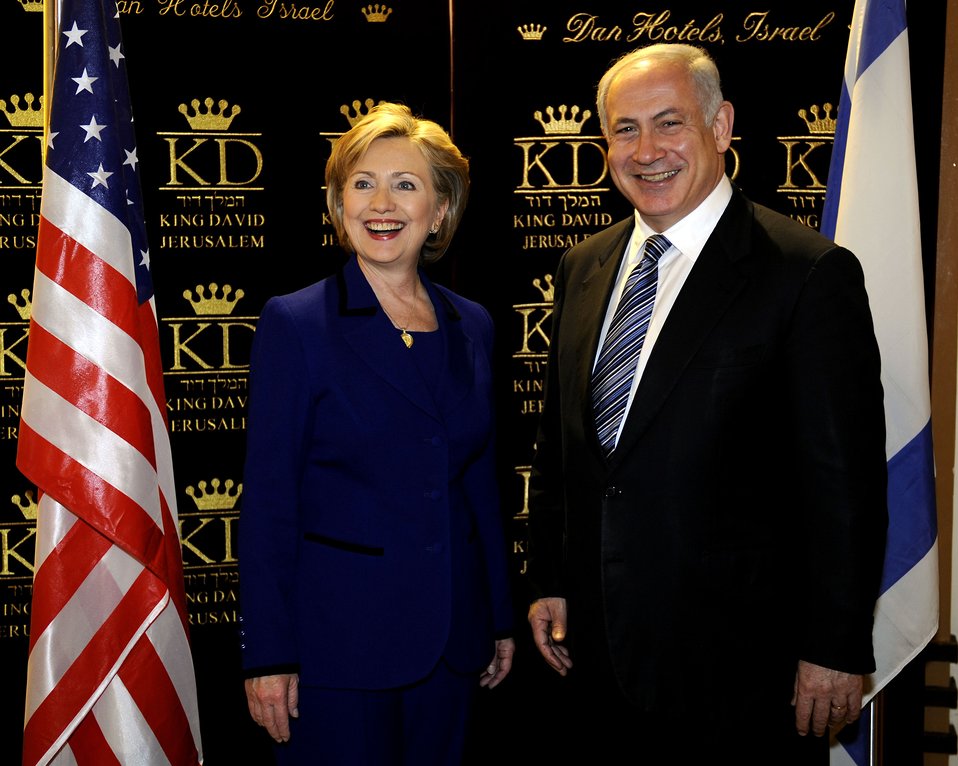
Secretary Clinton before her meeting with Israeli Prime Minister-Designate Benyamin Netanyahu at the King David Hotel, Jerusalem March 3, 2009.